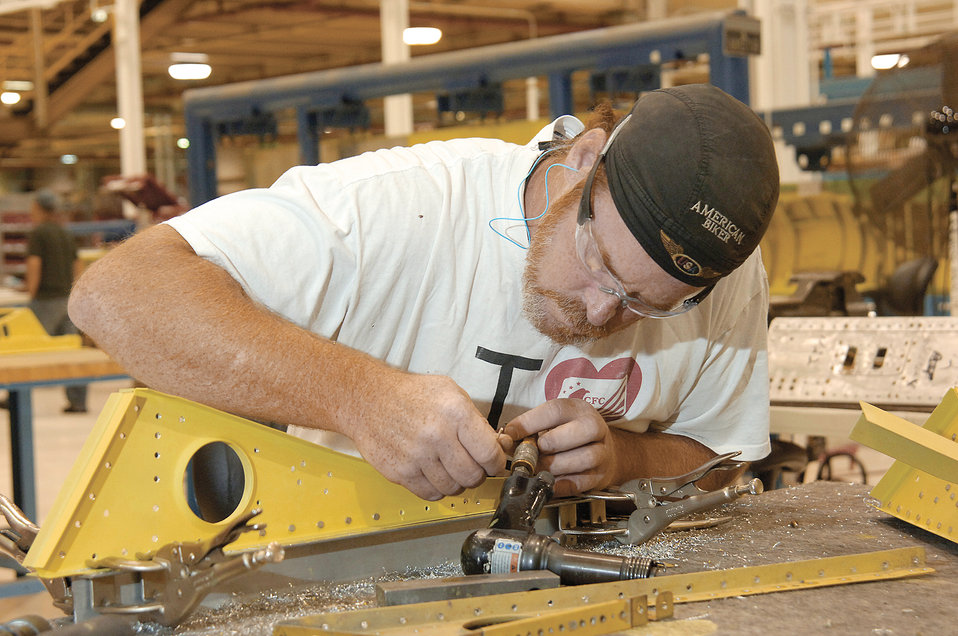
Mapping tool aids in depot maintenance career advancement

Robert Daniels drills holes for rivets while changing KC-135 Stratotanker spoiler ribs at Tinker Air Force Base, Okla. The Civilian Career Development Program for depot maintenance workers at Air Force Materiel Command's air logistics centers can be used as a mapping tool to broaden careers for those unable to use computers every day. Mr. Daniels is assigned to the 551st Commodities Maintenance Squadron.